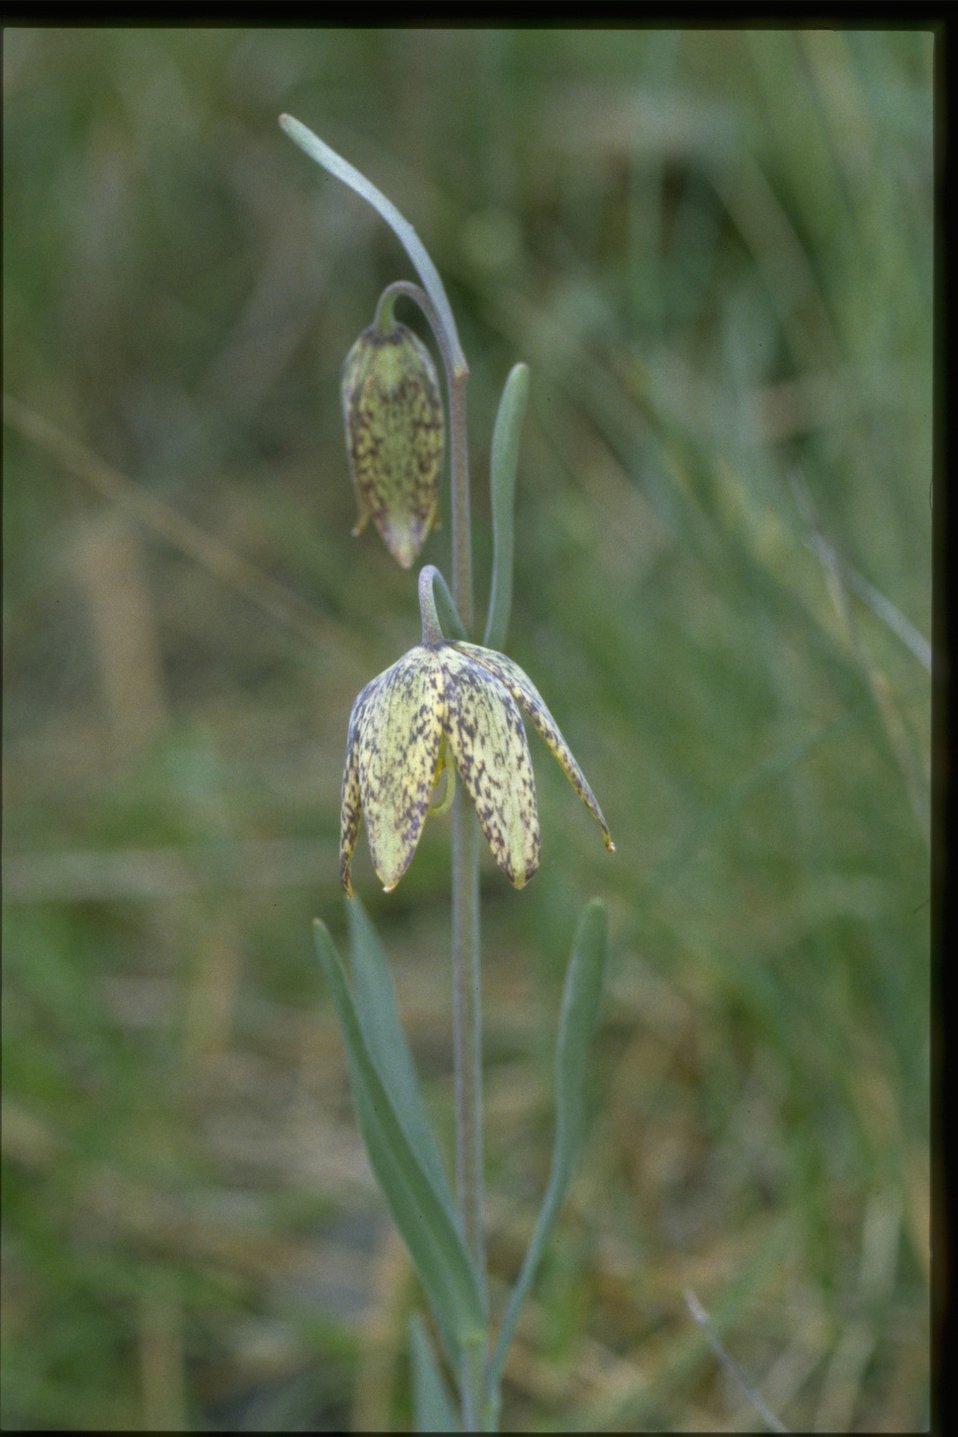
Medium shot of Fritilaria affine.